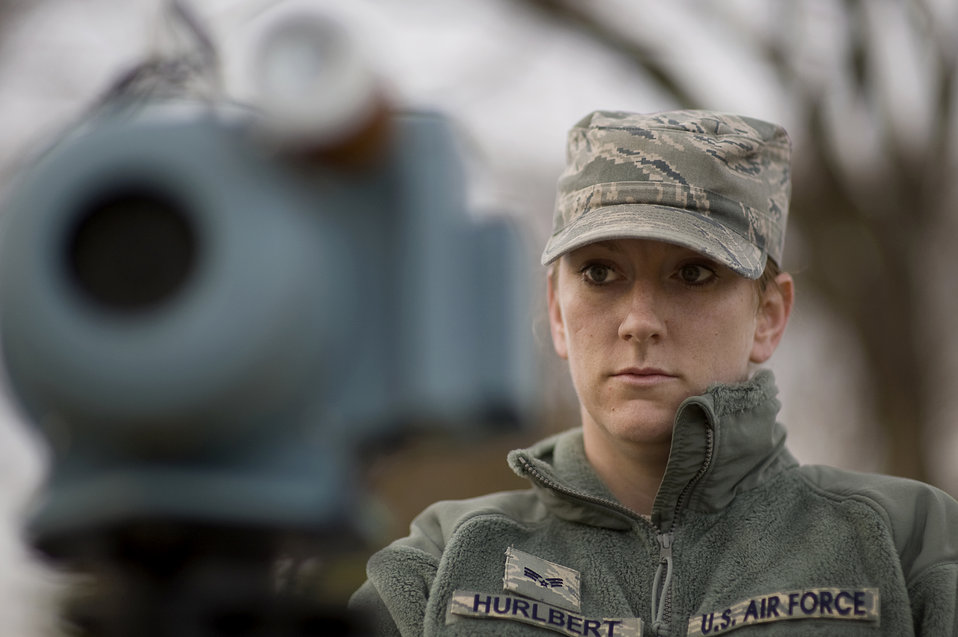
Airmen keep Yokota AB safe, healthy for relief efforts

Senior Airman Anna Hurlbert monitors radiation levels in the air March 24, 2011, at Yokota Air Base, Japan, in support of Operation Tomodachi. Hurlbert is assigned to the 18th Aerospace Medicine Squadron.